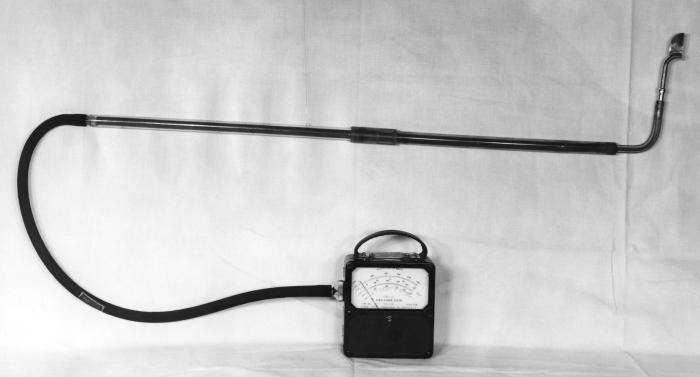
This historical photograph was provided by the Center for Disease Control's (CDC), National Institute for Occupational Safety and Health (NIOSH). Reprinted from the May, 1951, 'Industrial Hygiene Newsletter'. The image depicted an inexpensive airflow measuring device called a velometer, which had been fitted with a probe. The device measured concentrations of pollutants in the air.